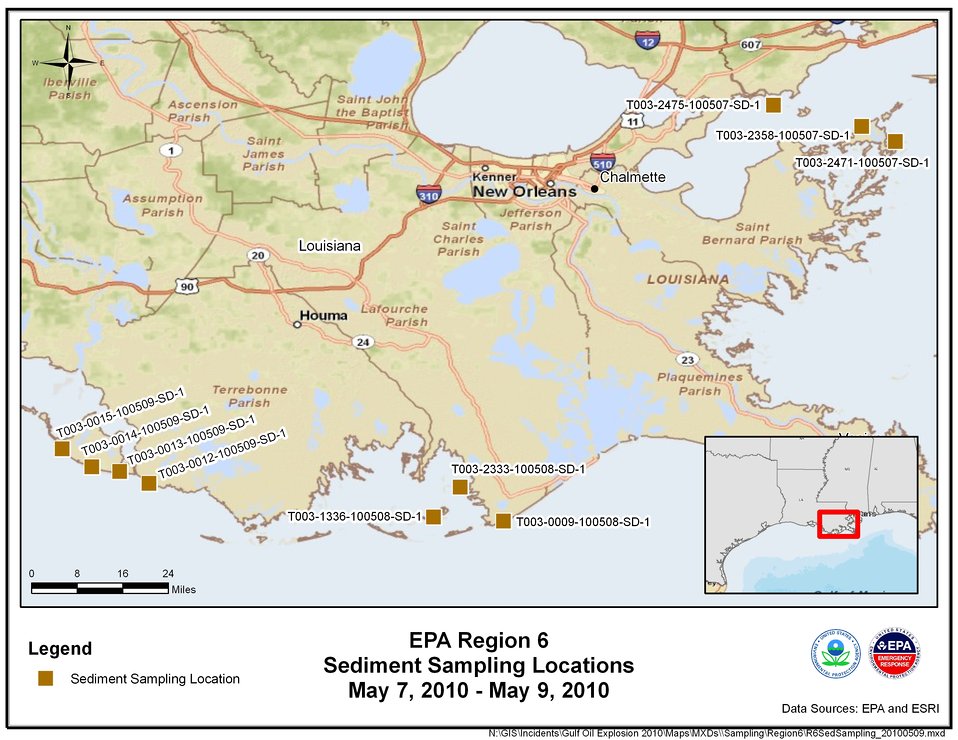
EPA Sediment Sampling Locations May 7-9, 2010